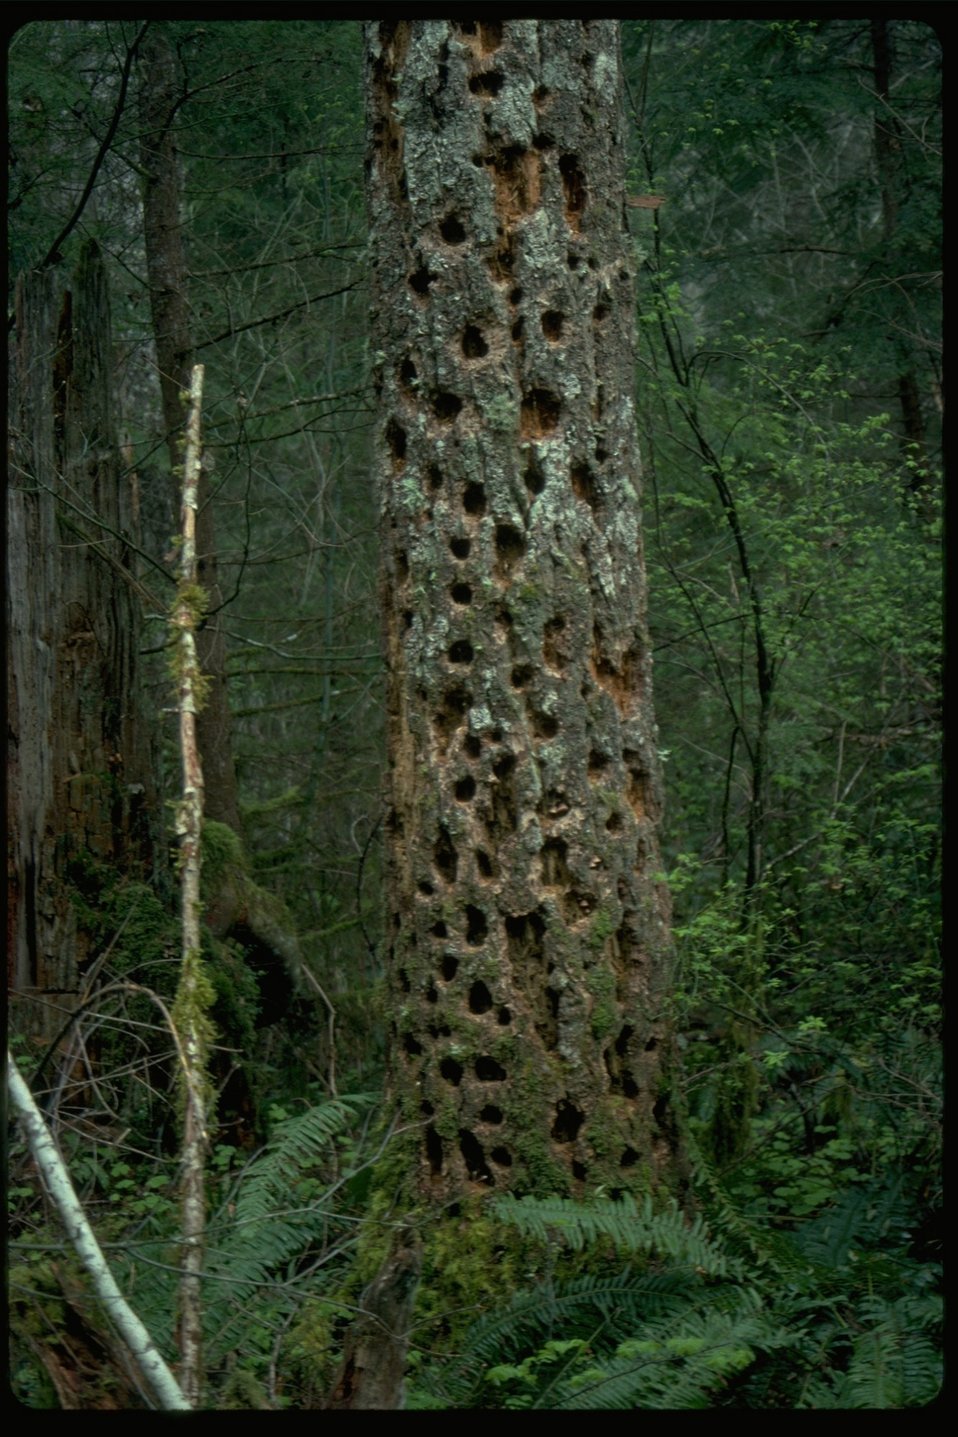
A Woodpeck Snag in the Nestucca area.